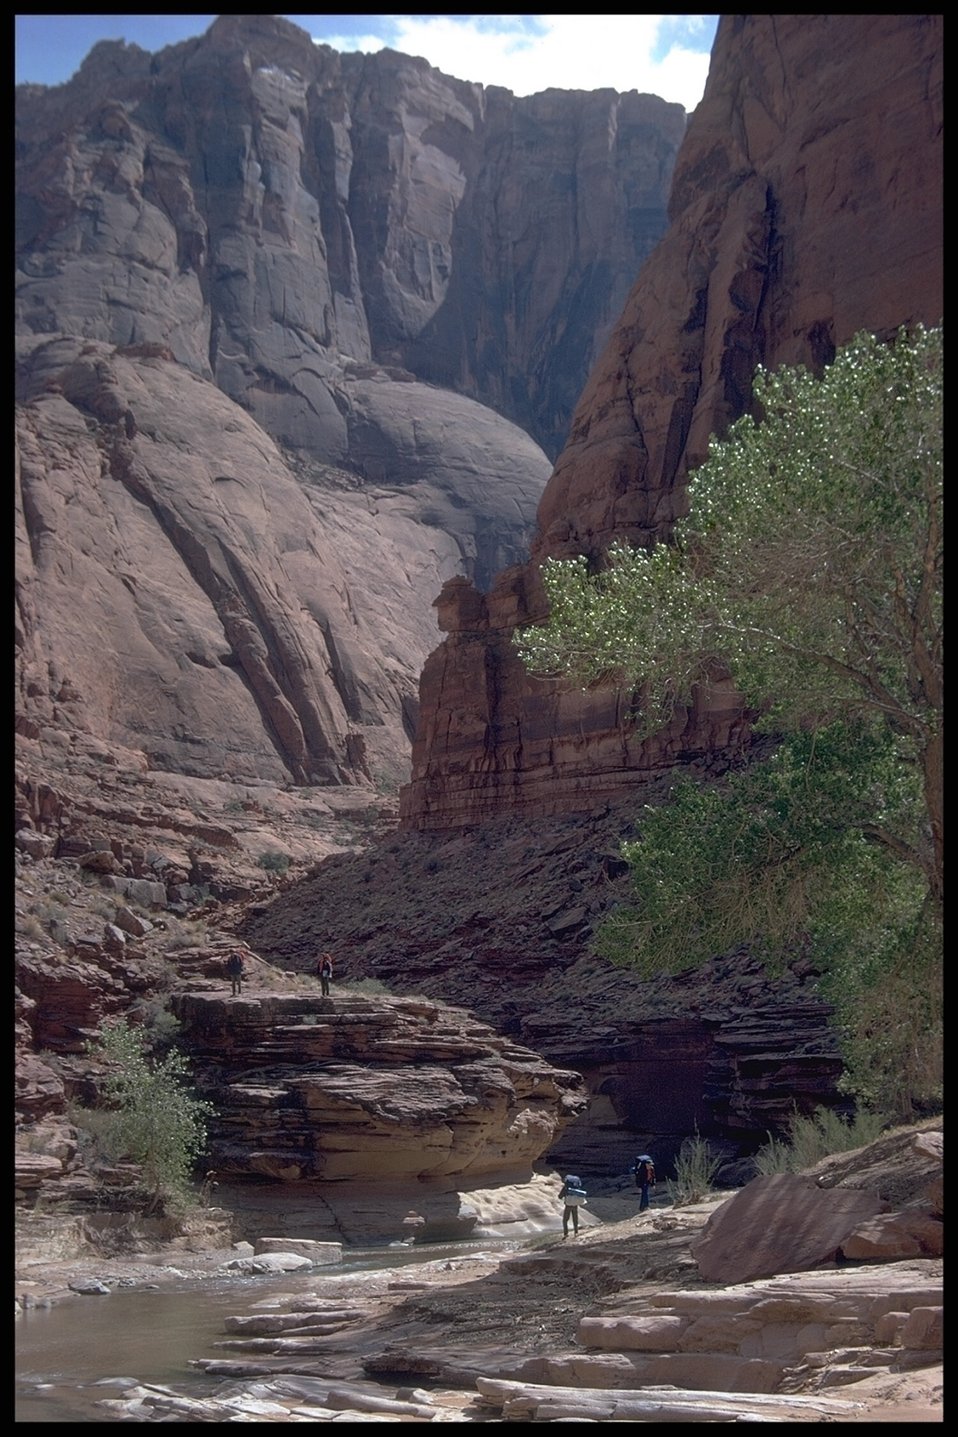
Hikers explore a canyon in Arizona public lands.